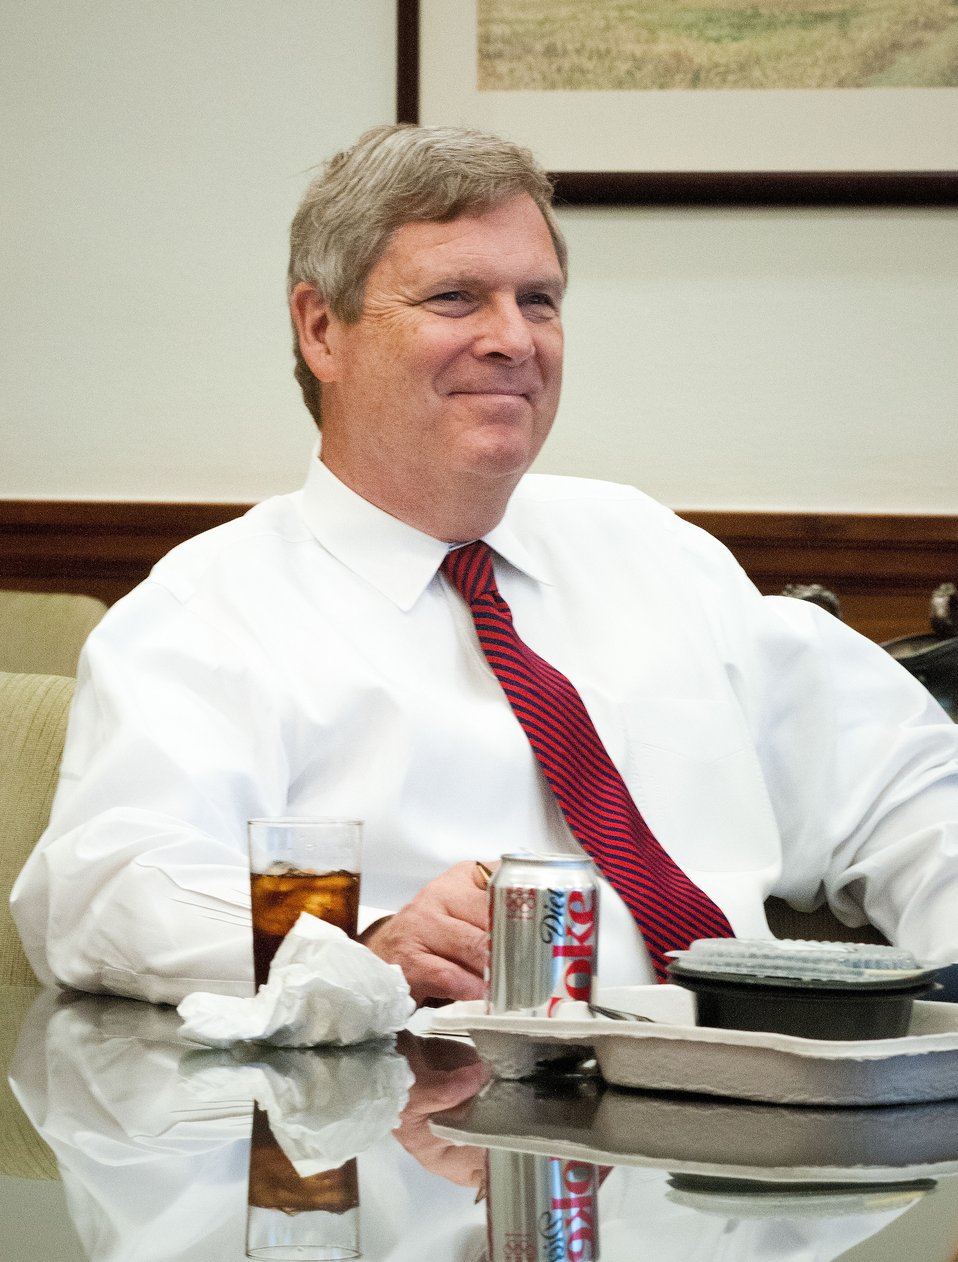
Agriculture Secretary Tom Vilsack meets with United States Department of Agriculture employees in Washington, D.C. for a Brown Bag lunch to discuss the role they play and to thank them for their dedication and diligence. The most recent luncheon was held Wednesday, July 25, 2012.